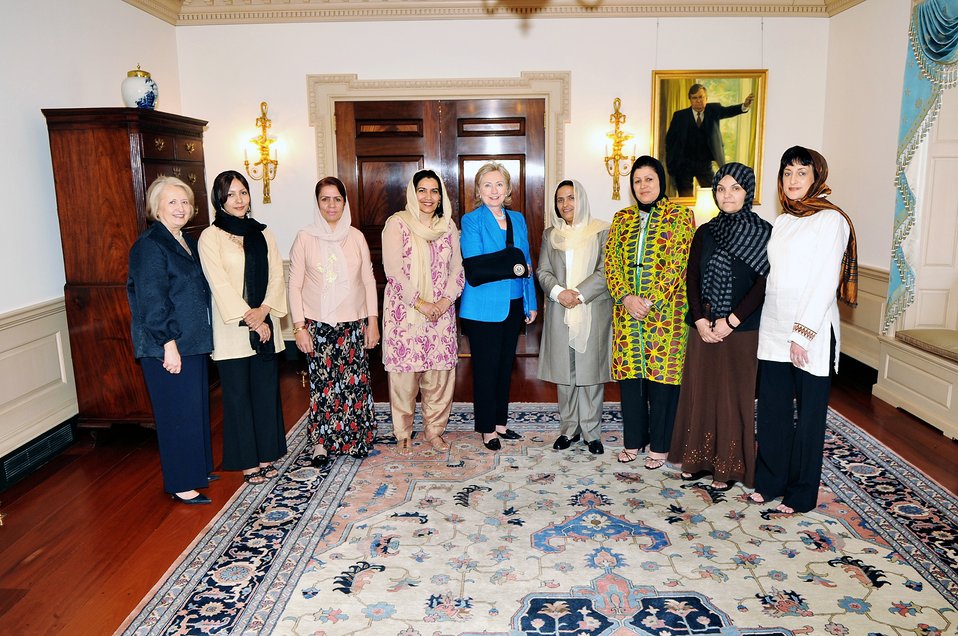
Secretary Clinton Meets With Senior Executive Afghan Women

U.S. Secretary of State Hillary Rodham Clinton meets with senior executive Afghan women civil servants on a program sponsored by USAID and the U.S.-Afghan Women's Council at the U.S. Department of State in Washington, DC July 7, 2009. [State Department photo]

Pictured from left to right:
Ambassador Melanne Verveer, State Department; Nahid Wardag, Ministry of Finance; Qudsia Kakar, Ministry of Public Works; Rahela Sidiqi, Civil Service Commission; Secretary Clinton
Fawzia Habibi, Ministry of Women's Affairs
Najeeba Nuristani, Ministry of Education
Nazira Rahman, Ministry of Agriculture
Mina Sherzoy, USAID/CDP